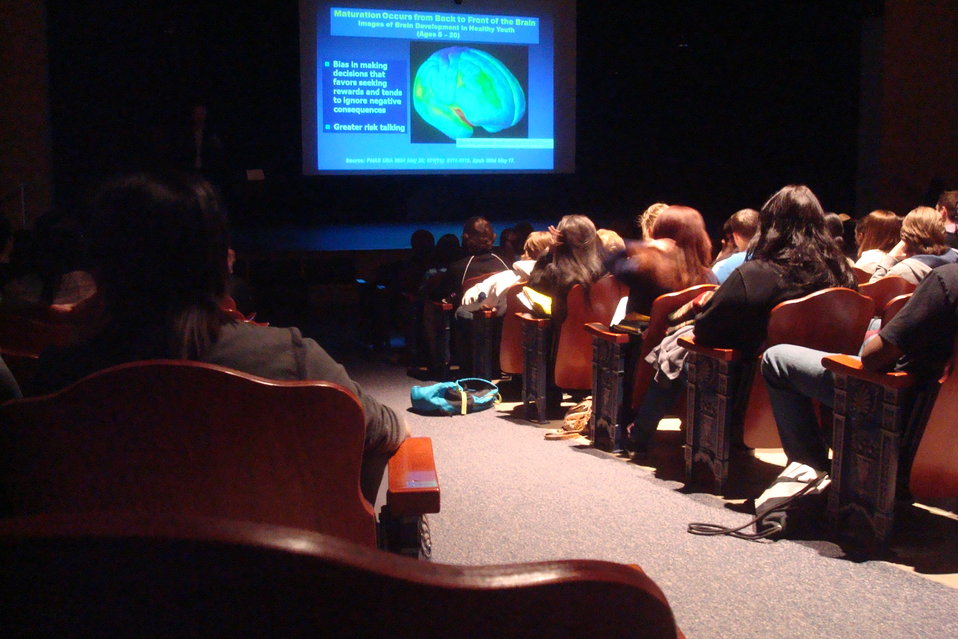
Tarten Teens Shattering the Myths

Students Against Destructive Decisions (SADD) hosted an assembly with guest speaker Dr. Ken Winters of the Center for Adolescent Substance Abuse Research (CASAR) at the University of Minnesota, as part of SADD's 'Signature Event' in Oakdale, Minnesota